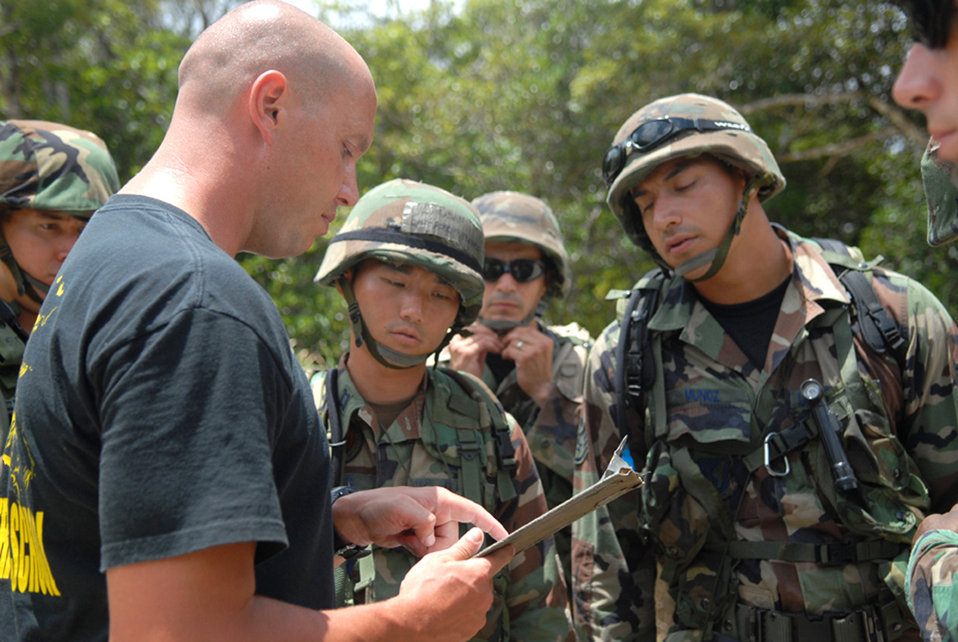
Jungle warfare training

Staff Sgt. Steve Cheatham goes over grid coordinates with Capt. Robert Bonner (center) and his team before they set out on their first navigation mission during jungle warfare training at Camp Gonsalves, Okinawa, Japan, on July 25. Thirty Airmen from the 18th Communications Squadron at Kadena Air Base, Japan, attended the weeklong course at the Jungle Warfare Training Center, which included land navigation and other skills, culminating in an endurance course on the final day. The 18th CS is the first non-combat support unit to go through this training. Sergeant Cheatham is chief instructor at the training center.